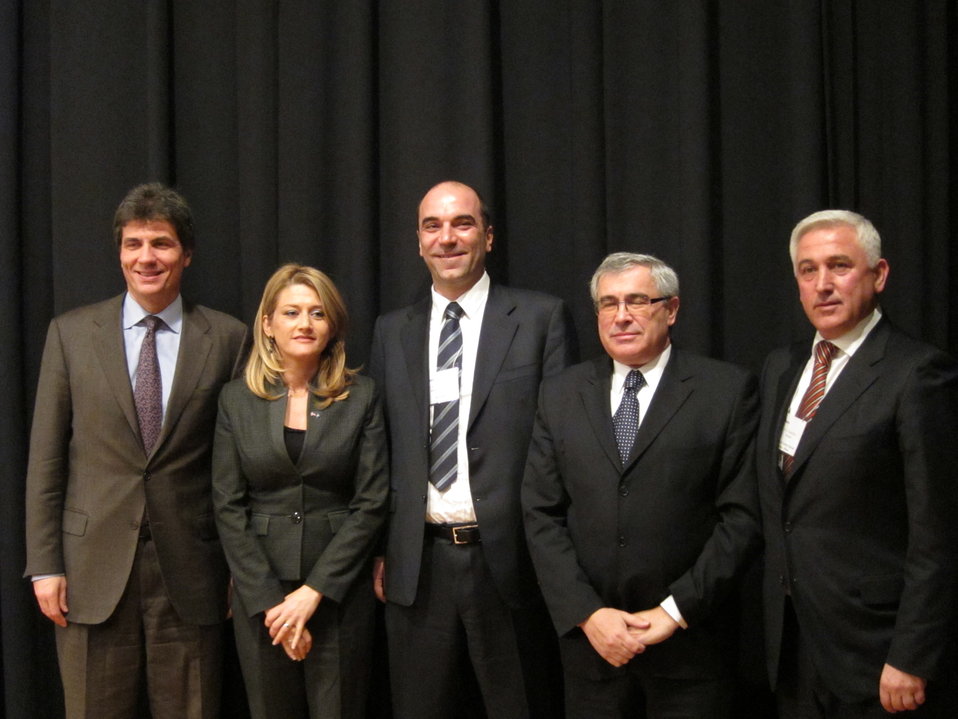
Assistant Secretary Fernandez Participates in the Balkans Business Summit

Assistant Secretary of State for Energy, Economic and Business Affairs Jose Fernandez, left, participates in the Balkans Business Summit in Baltimore, Maryland, on March 23, 2011. Kosovan Deputy Prime Minister Mimoza Kusari-Lila is to the right of Assistant Secretary Fernandez.